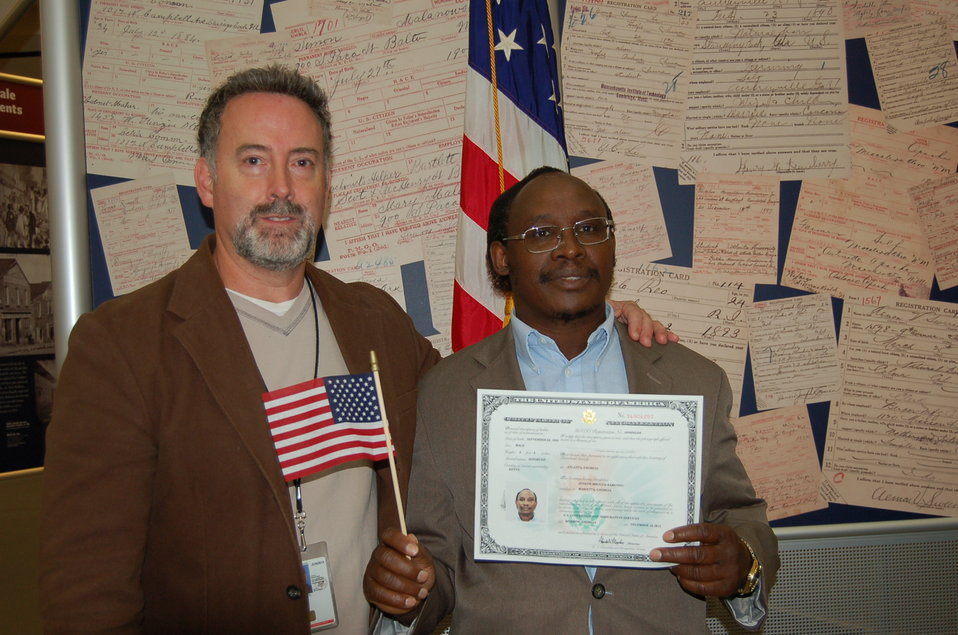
New Citizens